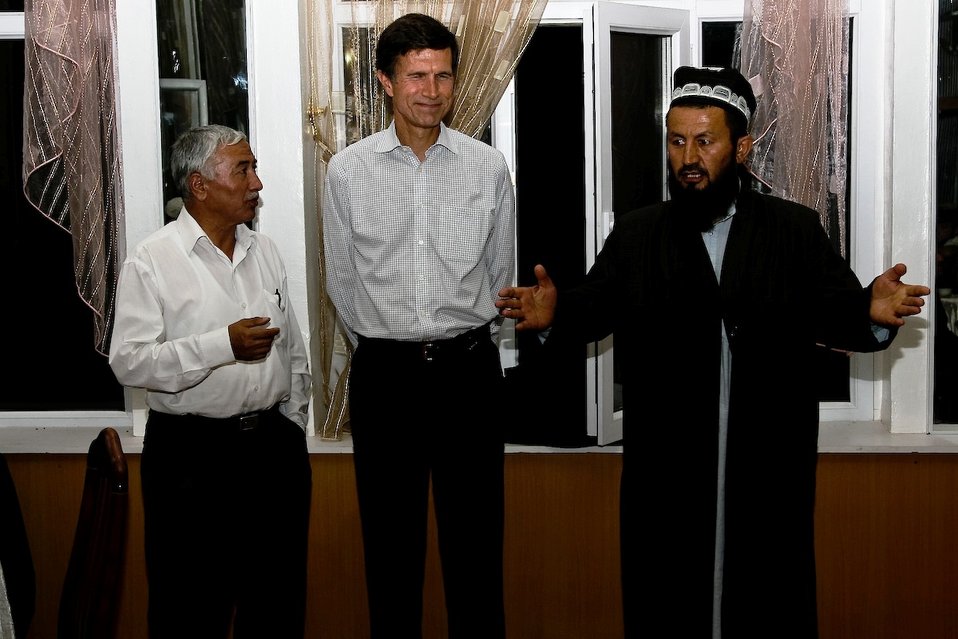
Assistant Secretary Blake Participates in a Ramadan Celebration in Tajikistan

U.S. Assistant Secretary of State Robert O. Blake participates in a Ramadan celebration during his visit to Dushanbe, Tajikistan, on August 31, 2010.